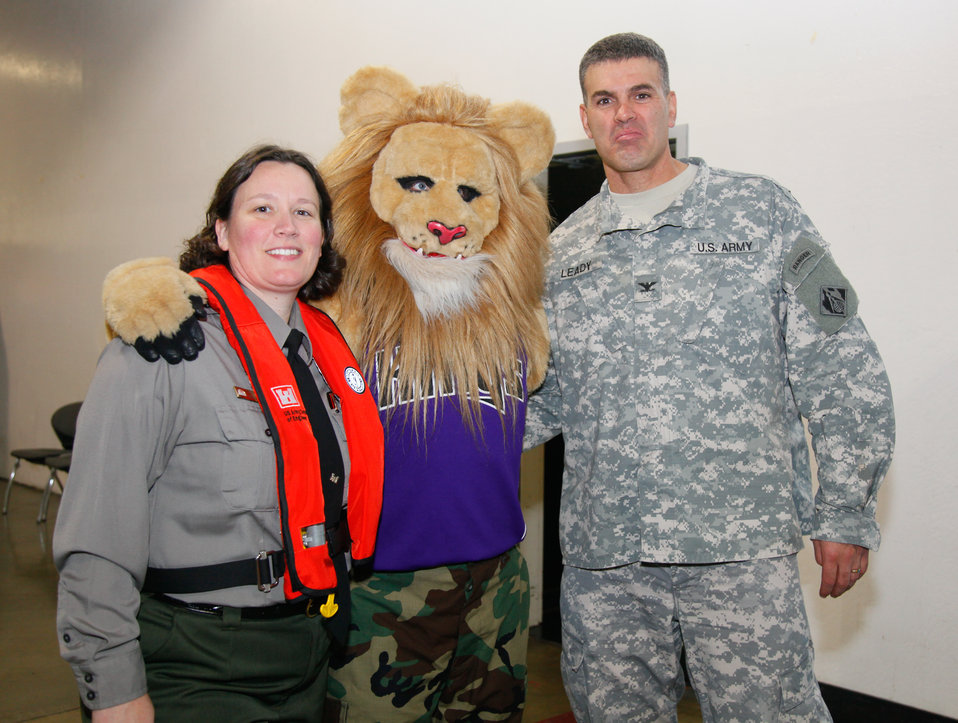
SACRAMENTO, Calif. (Nov. 12, 2010) – Col. Bill Leady (right), commander of the U.S. Army Corps of Engineers Sacramento District, and district park ranger Terry Hershey (left) pose with the Sacramento Kings basketball team mascot, Slamson, before the Kings’ Military Appreciation Night game here Nov. 10. The Sacramento District was recognized along with fellow military servicemembers during opening ceremonies and hosted a welcome booth to explain the Corps’ mission and educate attendees about levee safety, water safety and job opportunities with the Corps.